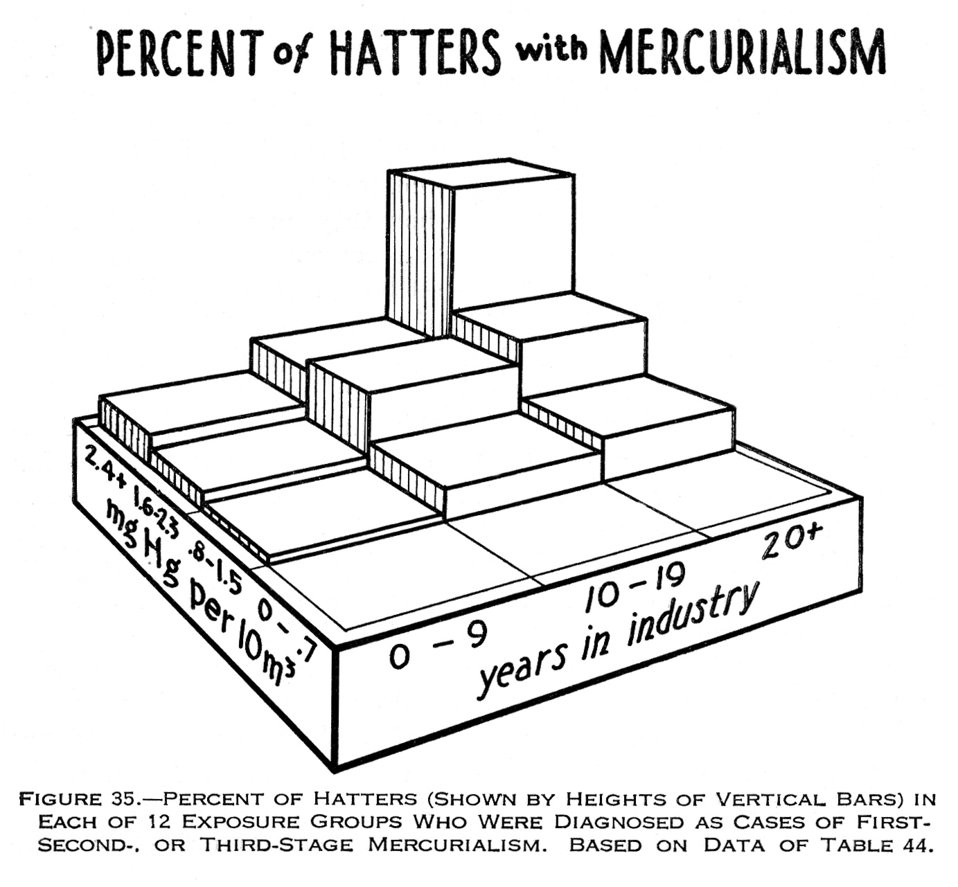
Provided by the Center for Disease Control's (CDC), National Institute for Occupational Safety and Health (NIOSH), this historic image depicted a three-dimensional graph entitled, 'Percent of Hatters with Mercurialism', in order to illustrate the percent of hat manufacturing industry workers who were suffering from mercury poisoning. The image was published in the 'Public Health Bulletin', No. 263, Fig. 35, 1941. Mercury is used in the 'carroting' of animal pelts. Carroting is the process of treating 'hatters'' fur with mercury nitrate, thereby, rendering the fur suitable for manufacturing hats. If precautions were not taken, such as wearing a filtered breathing mask, or gloves, mercury exposure was quite likely, and could lead to heavy metal poisoning, with severe pathologic neurological consequences.